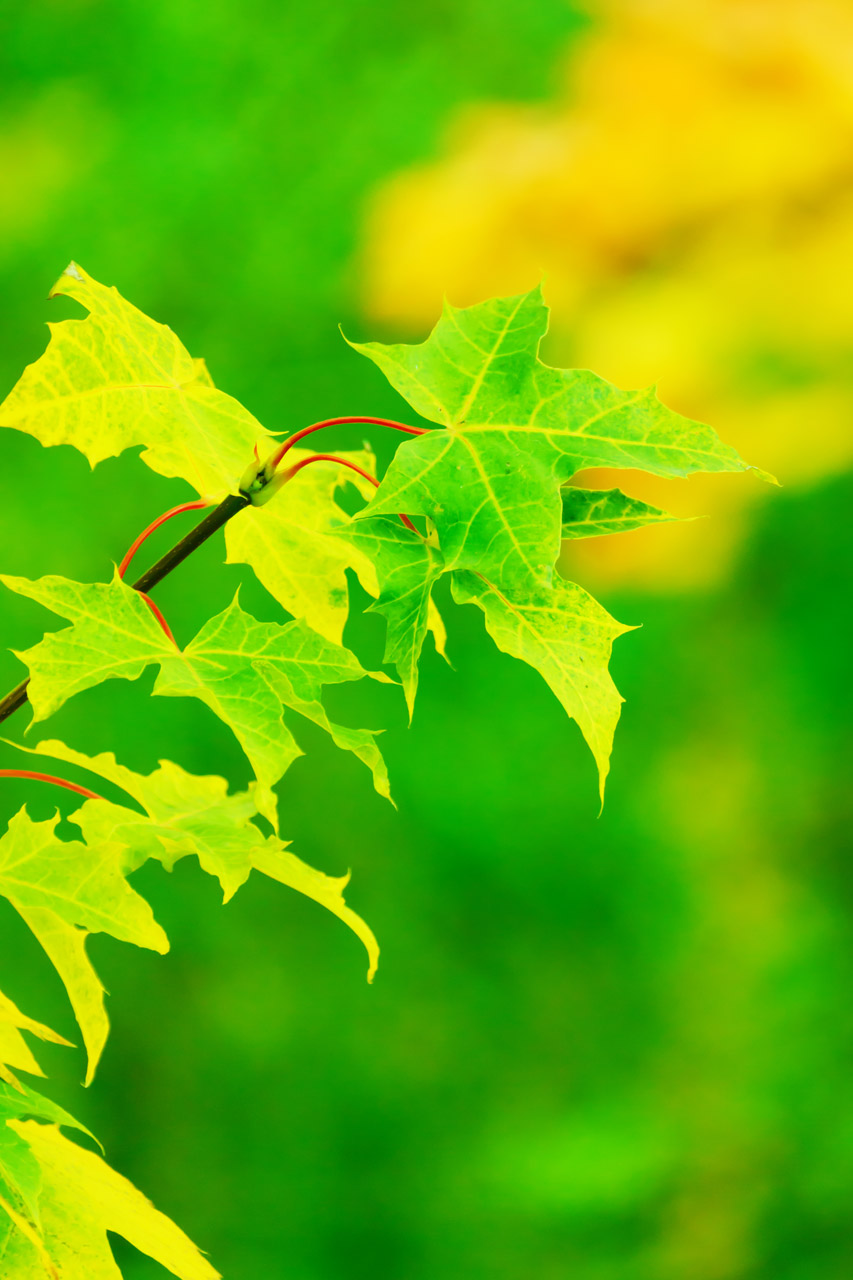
Green and yellow leaves

Saturated green and yellow leaves on blurred background.